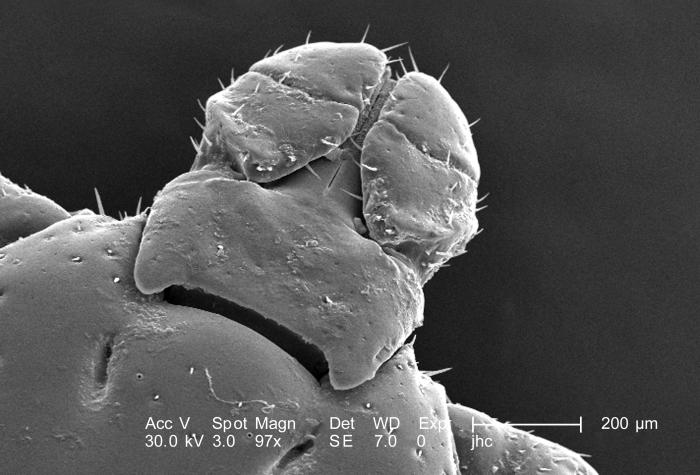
Under a magnification of 97X, this scanning electron micrograph (SEM) depicted a dorsal view of an unidentified male Dermacentor sp. tick found upon a cat in the suburbs of Decatur, Georgia, which measured approximately 3.5mm from its gnathosoma (seen here) (i.e., capitulum), which is where its mouthparts are located, to the distal abdominal margin (PHIL 9961). Note in PHIL 9959 and 9960, that the entire dorsum of this tick's abdomen is covered by its tough 'scutum', or 'shield', categorizing it as a male. In female Ixodid-species ticks, the scutum only partially covers the dorsal abdomen. Seen clearly in this image are the tick's pedipalps between which is located its skin-piercing hypostome and chelicerae. Note PHIL 9963 and 9964 for two additional views of this region under successively greater magnification.